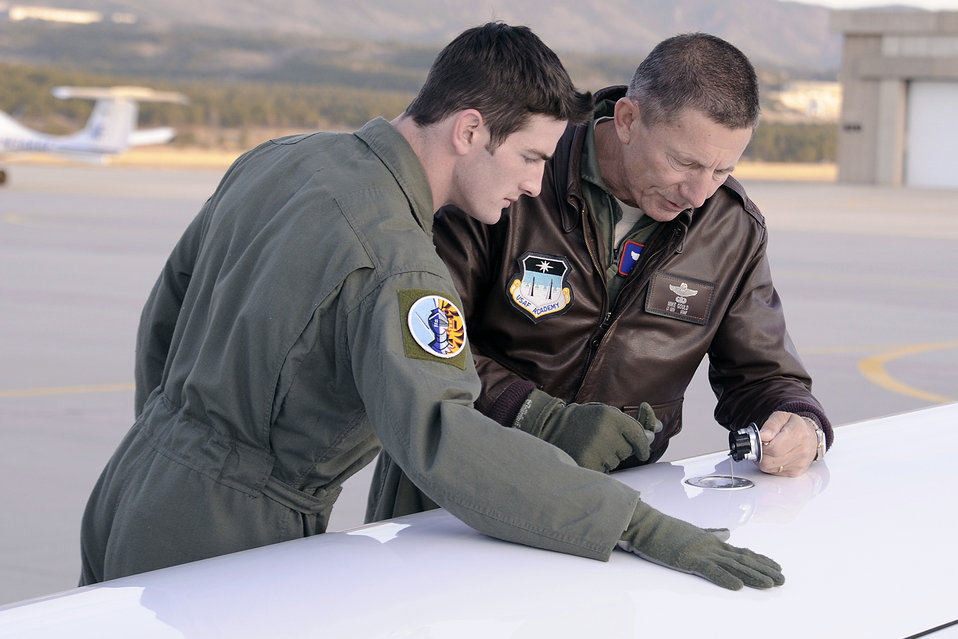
T-52A training flight

Lt. Gen. Mike Gould and Cadet 1st Class Luke Hyder perform a pre-flight inspection of a T-52A aircraft before a training flight April 15, 2010, on the airfield at the U.S. Air Force Academy, Colo. General Gould is the U.S. Air Force Academy superintendent.